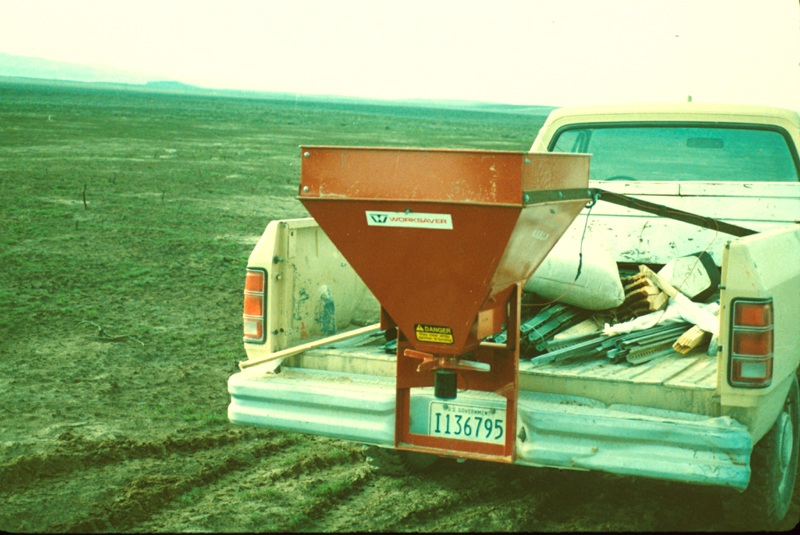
Truck Seeding Range Restoration Project Lower Snake River District